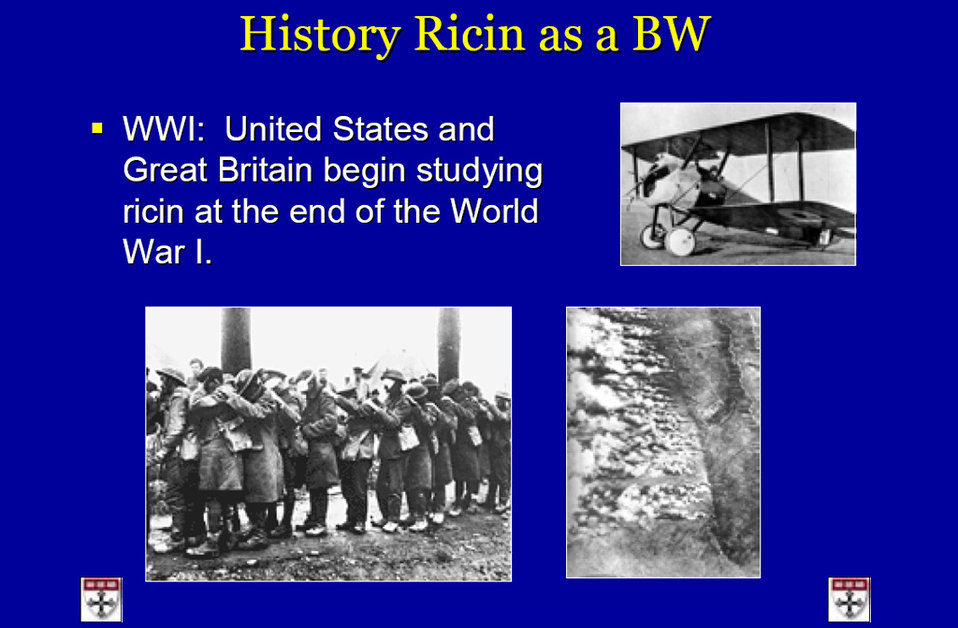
This presentation highlights the history, chemistry, and uses of ricin, a highly toxic poison made from castor beans.